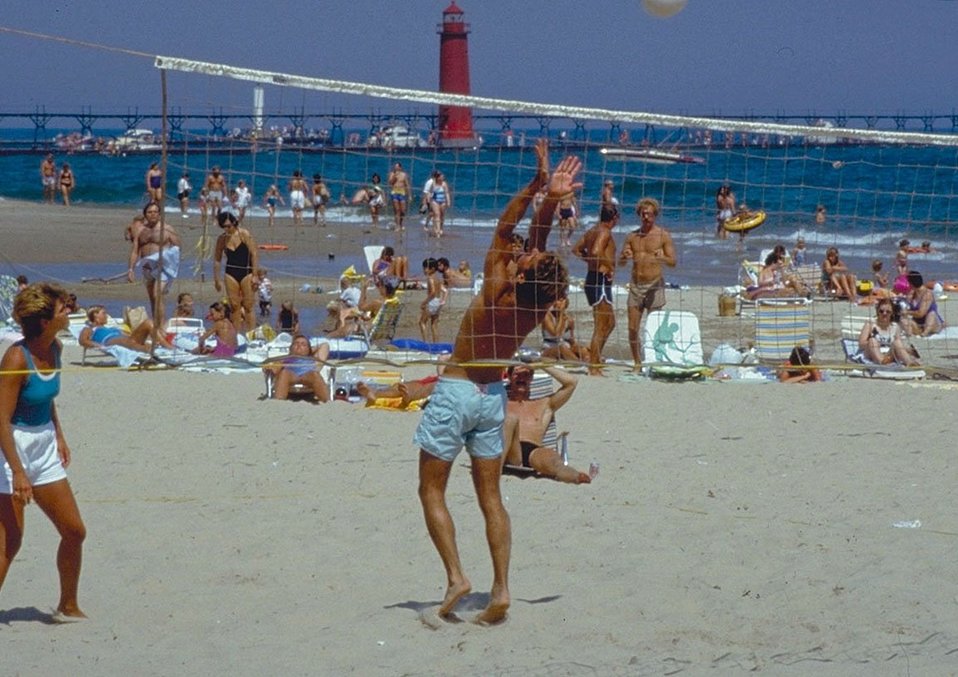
Grand Haven, MI. Lake Michigan